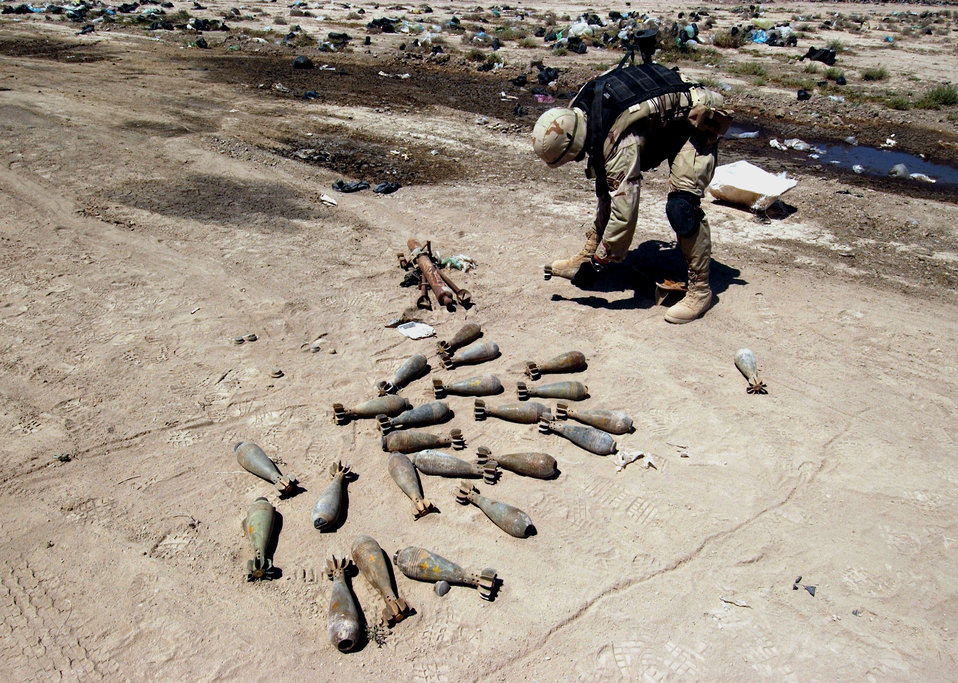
Mortar roundup

BALAD AIR BASE, Iraq -- Staff Sgt. Chris King moves 82 mm mortars to a safe place for demolition here April 14. Sergeant King is a explosive ordnance team member with the 332nd Expeditionary Civil Engineer Squadron.